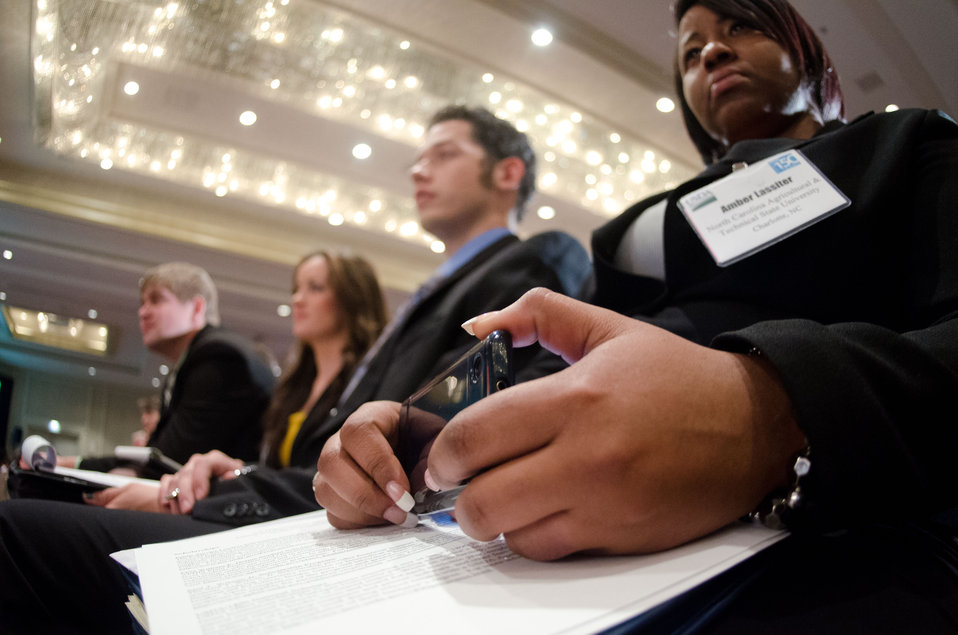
North Carolina Agriculture & Technical State University student Amber Lassiter (right) records comment from 7 former Secretaries of Agriculture seated on the plenary panel “Visions of the Future” hosted by current Agriculture Secretary Tom Vilsack at the 2012 Agricultural Outlook Forum, “Moving Agriculture Forward” in Arlington, VA, on Thursday, February 23, 2012.